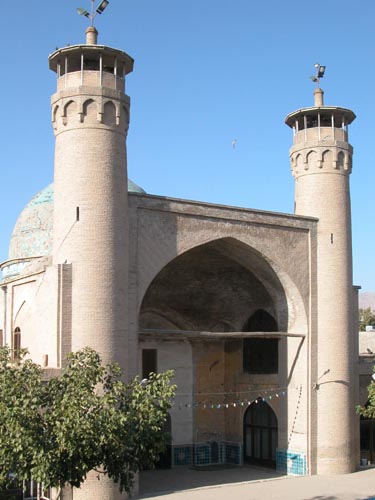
Jame Mosque of Borujerd